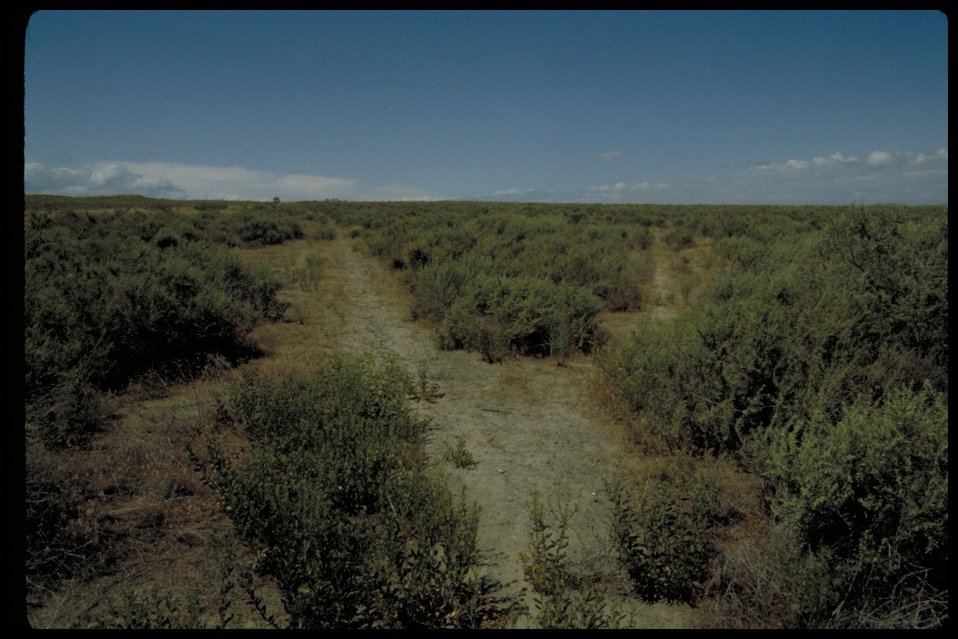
Oregon Trail north of Givens Hot Springs Lower Snake River District